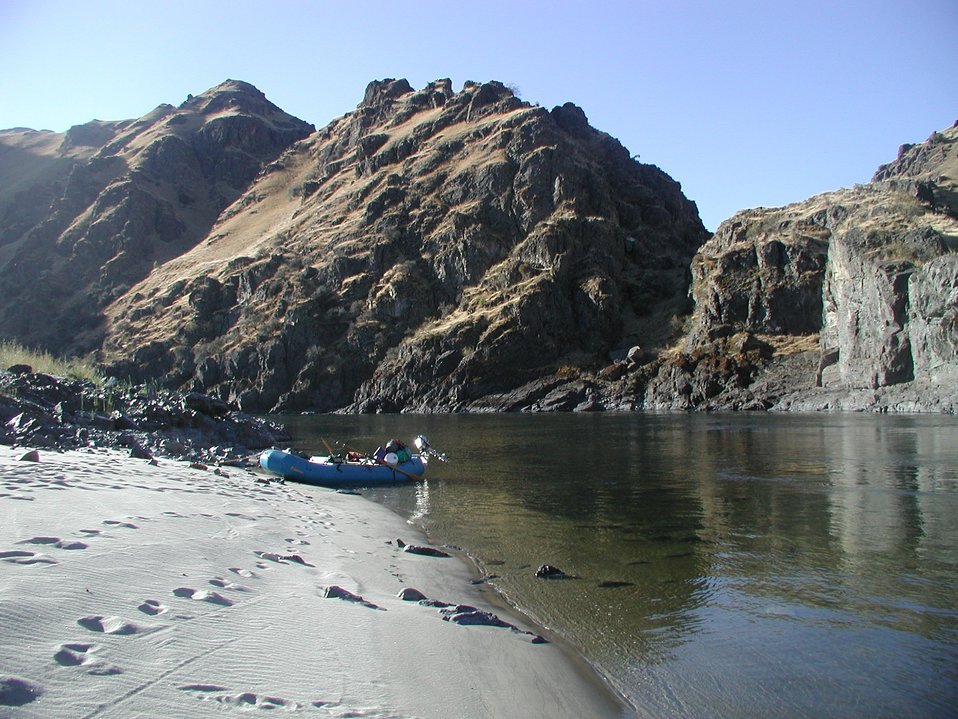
Scenic shot of Lower Salmon River Cottonwood Field Office UCSC Upper Columbia Salmon Clearwater District